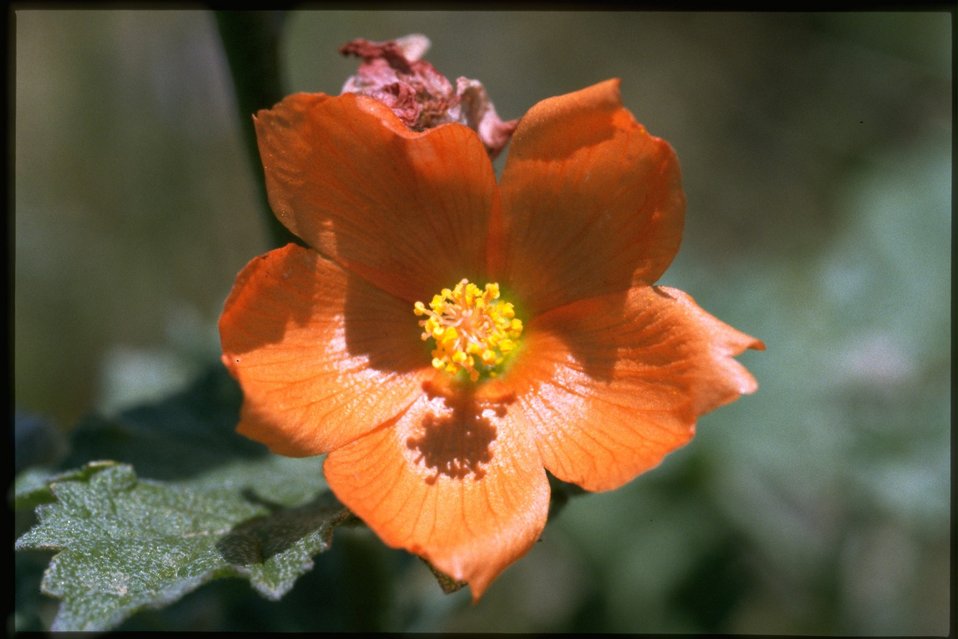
Closeup shot of Sphaeralcea grossular ide folia, Red Glove Mallow.